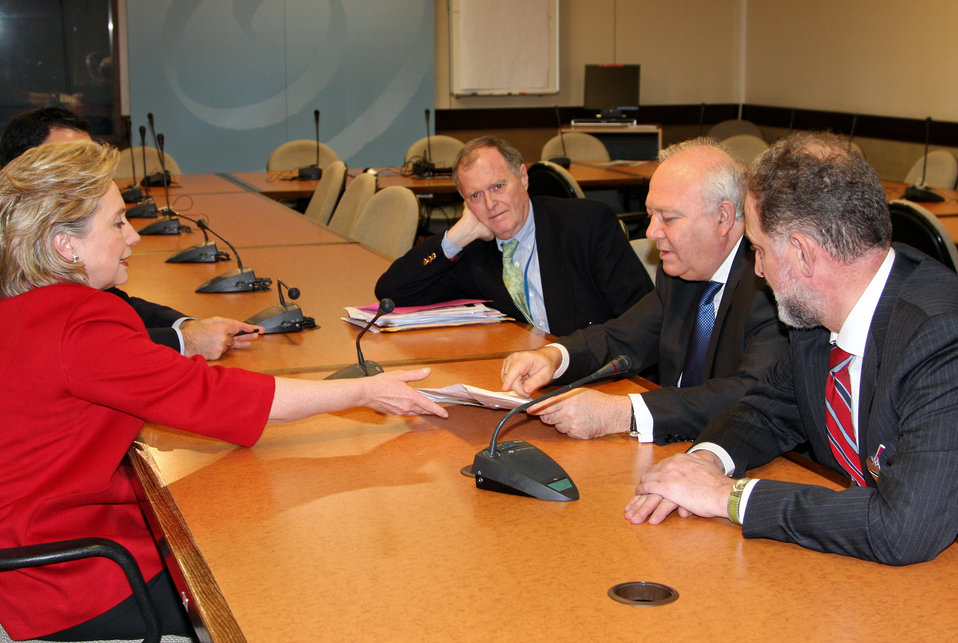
Secretary Clinton Meets With Spanish Foreign Minister

U.S. Secretary of State Hillary Rodham Clinton participates in a bilateral meeting with Spanish Foreign Minister Miguel Angel Moratinos in Brussels, Belgium December 4, 2009.